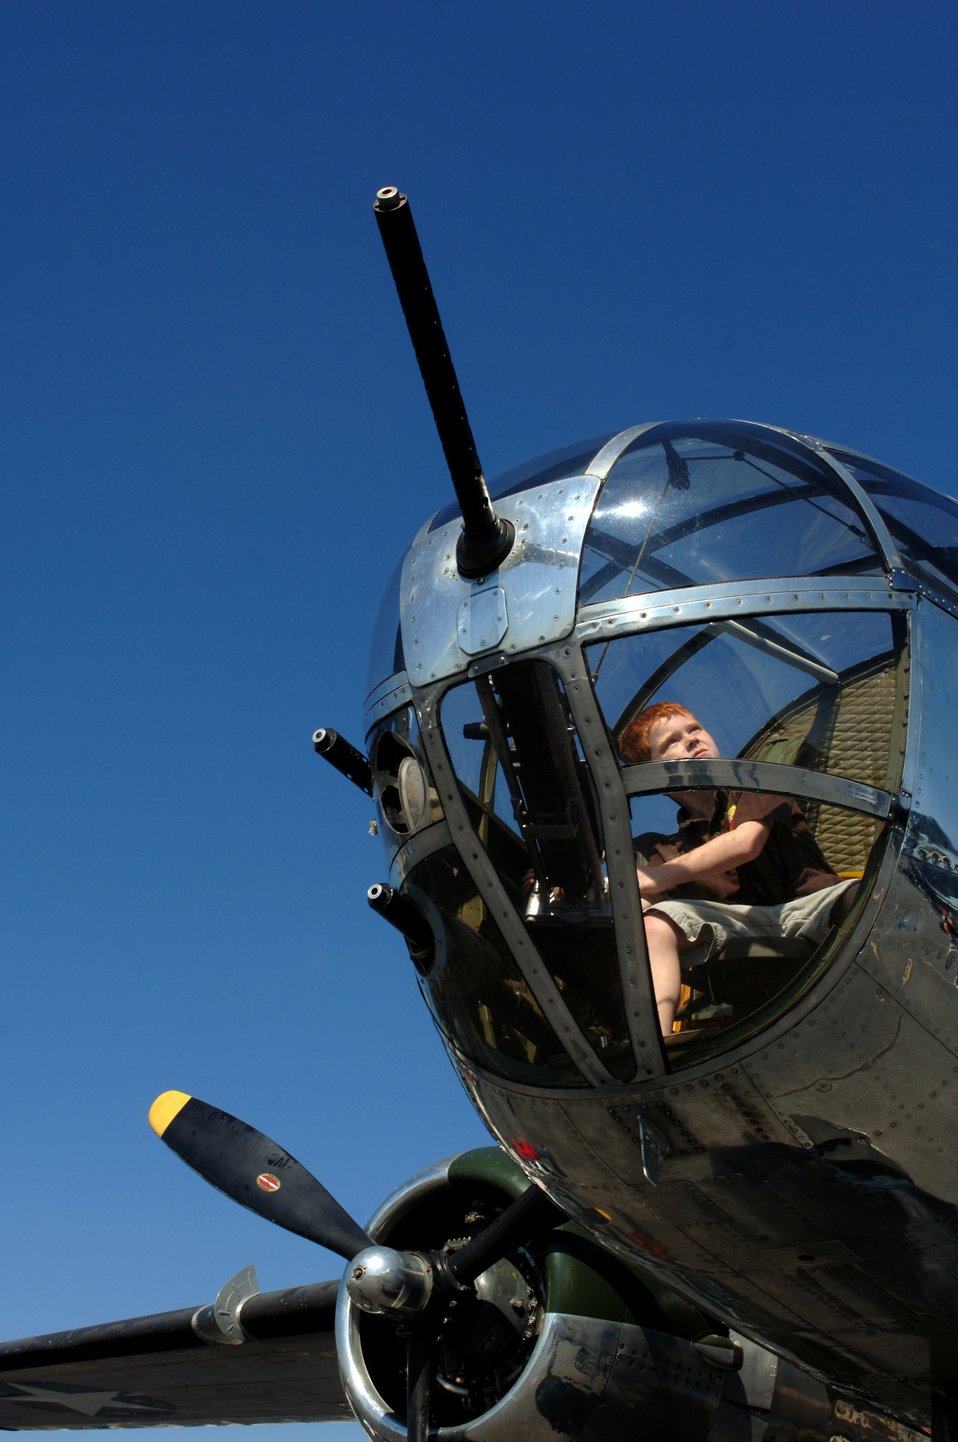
Air Force Week Atlanta wraps up

7-year-old Michael Webb of Mansfield, Ga., looks for enemy targets while sitting inside the gunner's seat of a B-25J Mitchell on display during the Great Georgia Air Show culminating Air Force Week Atlanta Oct. 13 at Peachtree City, Ga. Atlanta is one of six cities throughout the country chosen to host an Air Force Week. The theme for the year is